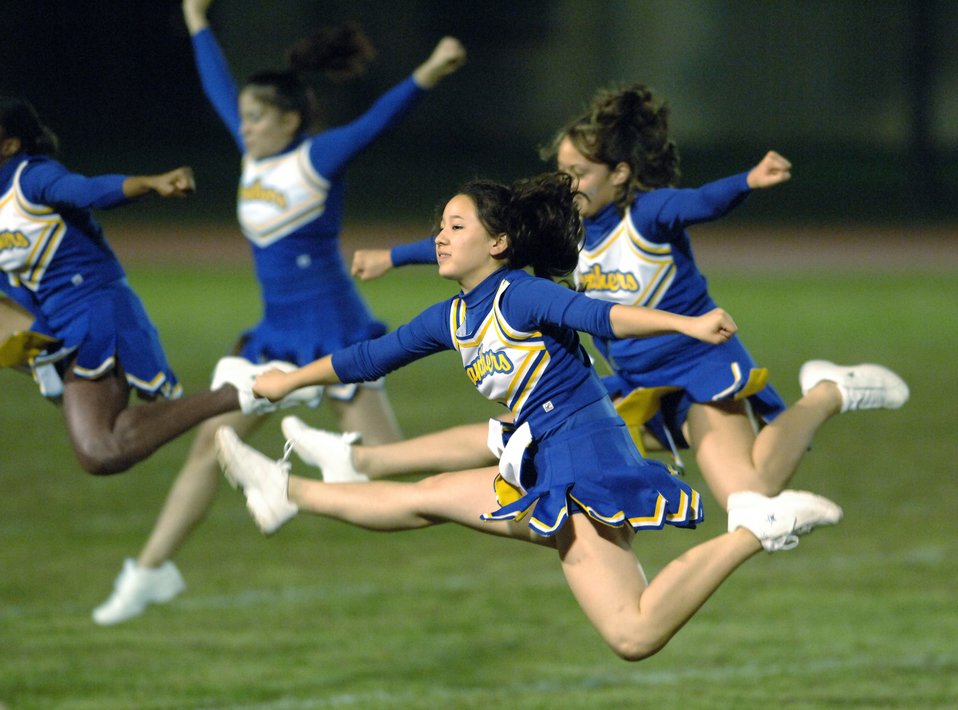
Football frenzy

YOKOTA AIR BASE, Japan (AFPN) -- Jennifer Higuchi, foreground, and her teammates from Yokota High School cheer during half time of the Panther's